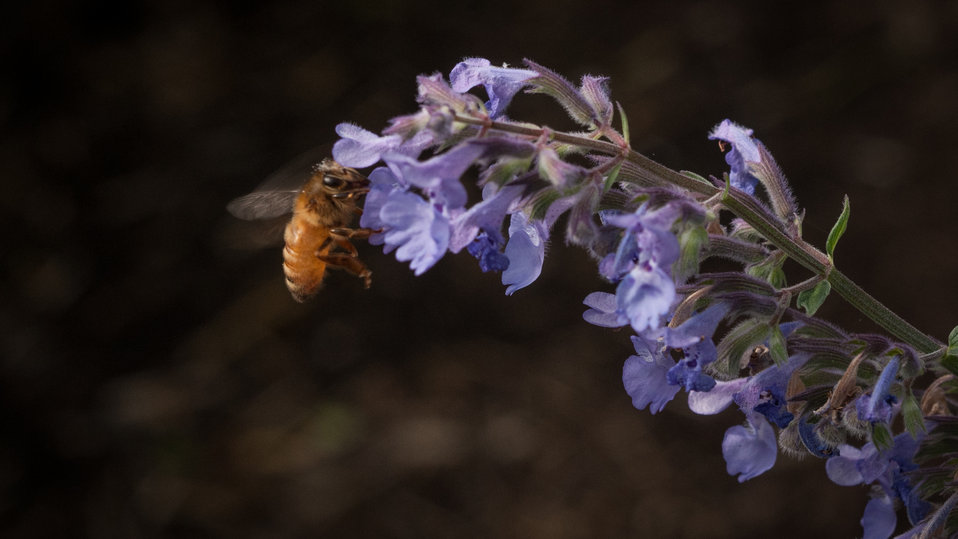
A honey bee is attracted to flowers in the U.S. Department of Agriculture People's Garden, pollinator garden, outside the headquarters' Whtten Building in Washington, D.C., on Wednsday, May 22, 2013.